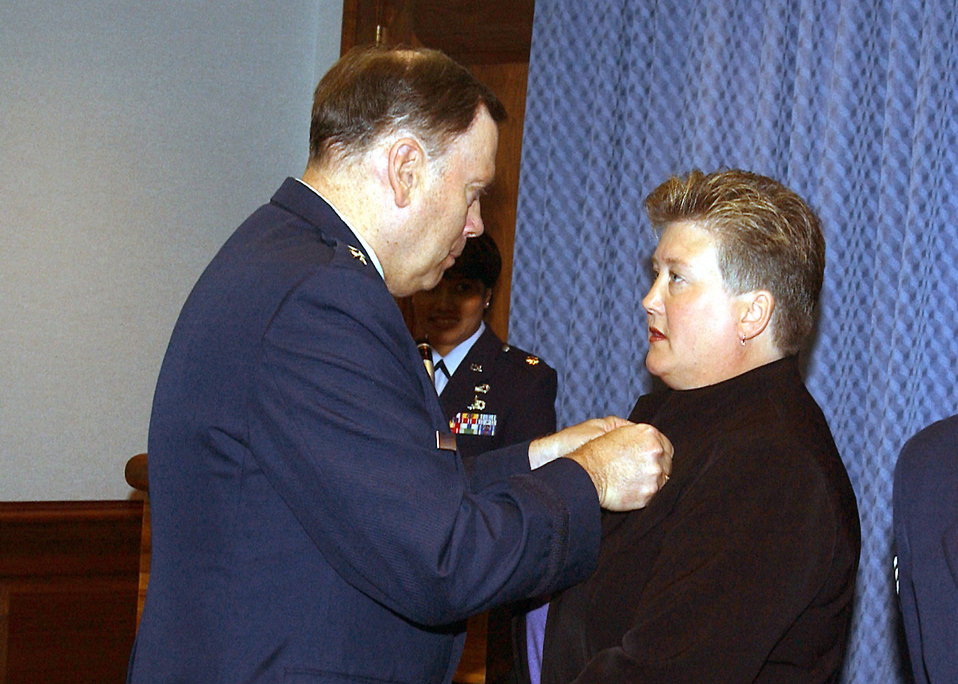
Parent pins

WASHINGTON -- Air Force Chief of Staff Gen. John P. Jumper places a parent pin onto Jennifer Scali's lapel at a Pentagon ceremony May 7. Scali is the mother of Senior Airman Dominic Scali, an aircraft maintenance specialist with the Washington D.C. Air National Guard's 113th Fighter Wing at Andrews Air Force Base, Md. The presentation was part of a larger ceremony in which parents of Air Force Reserve, Guard and active duty airmen were recognized for their contributions to national defense. Airmen can sign up at http://www.ygof.com to have a pin sent to their parents to recognize their support for the Air Force. The pin is similar to the employer pin recently sent to the civilian employers of Air Force reserve and guardsmen.